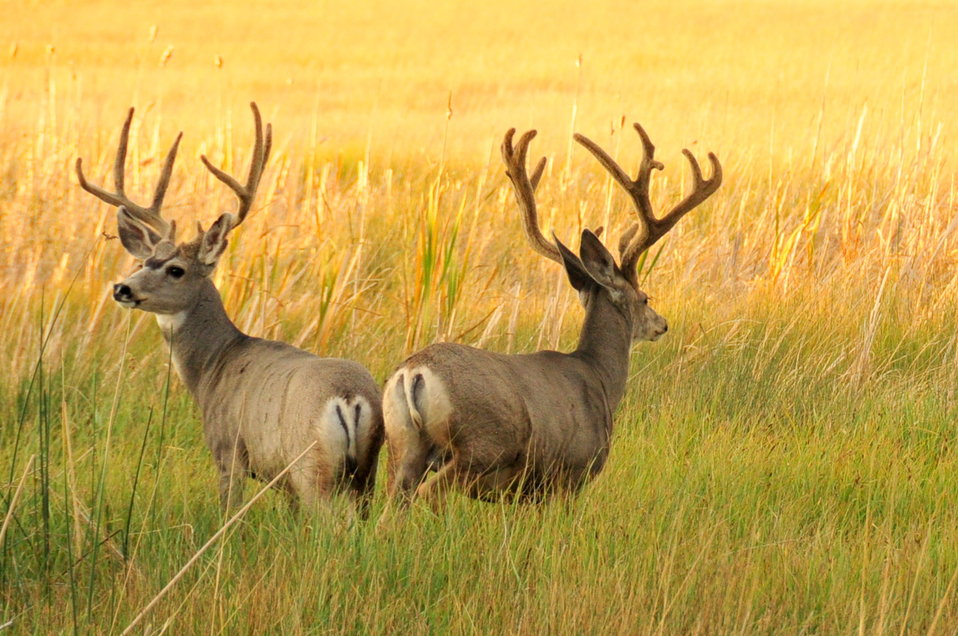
Mule deer bucks in velvet Seedskadee National Wildlife Refuge 01

Two mature mule deer bucks in late summer on Seedskadee NWR.